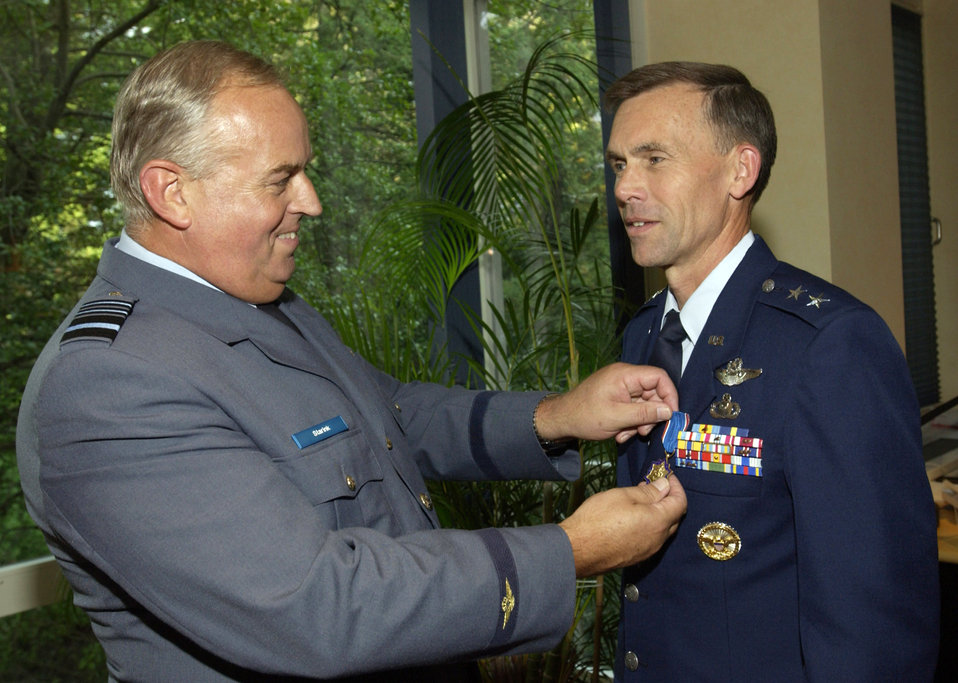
General earns Dutch gold medal of merit

WASHINGTON -- Lt. Gen. Dick Starink (left) presents the Medal of Merit in Gold to U.S. Air Force Maj. Gen. John L. Hudson during a reception at the Netherlands Embassy here Sept. 9. General Hudson received the award for his outstanding leadership while serving as executive director of the Joint Strike Fighter program. The medal is presented to foreign civil and military authorities for extraordinary personal conduct and commitment supporting Dutch civil and military interests.